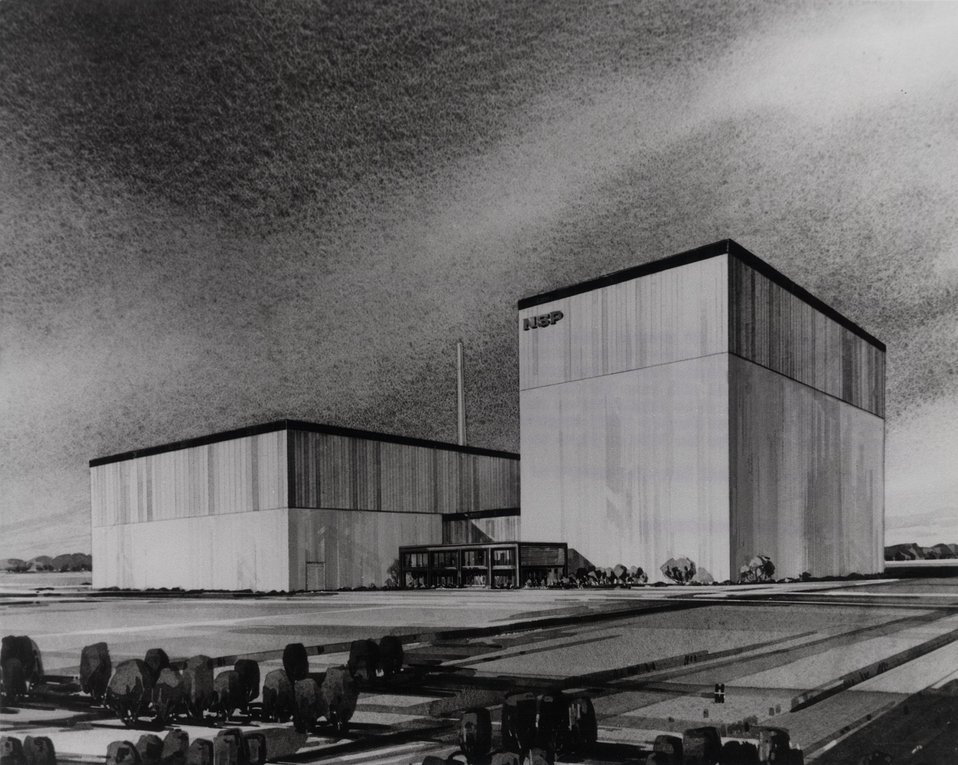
Monticello Nuclear Generating Plant in Minnesota, which will have the first large reactor pressure vessel to be fabricated at the site.